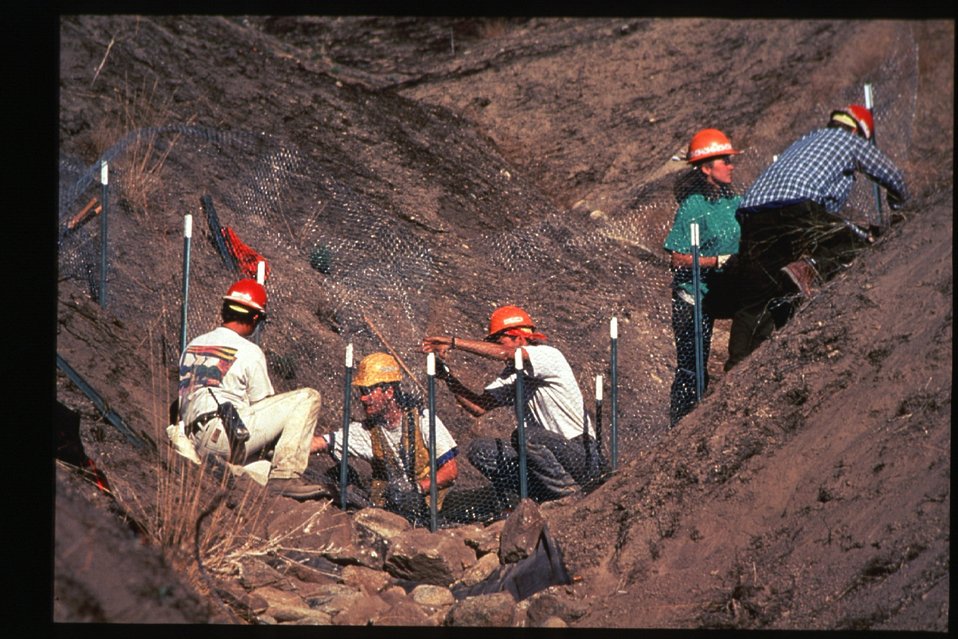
Boise Foothills Fire Danskin Mountains and South Fork of Boise River Erosion Four River Field Office LSRD Lower Snake River District